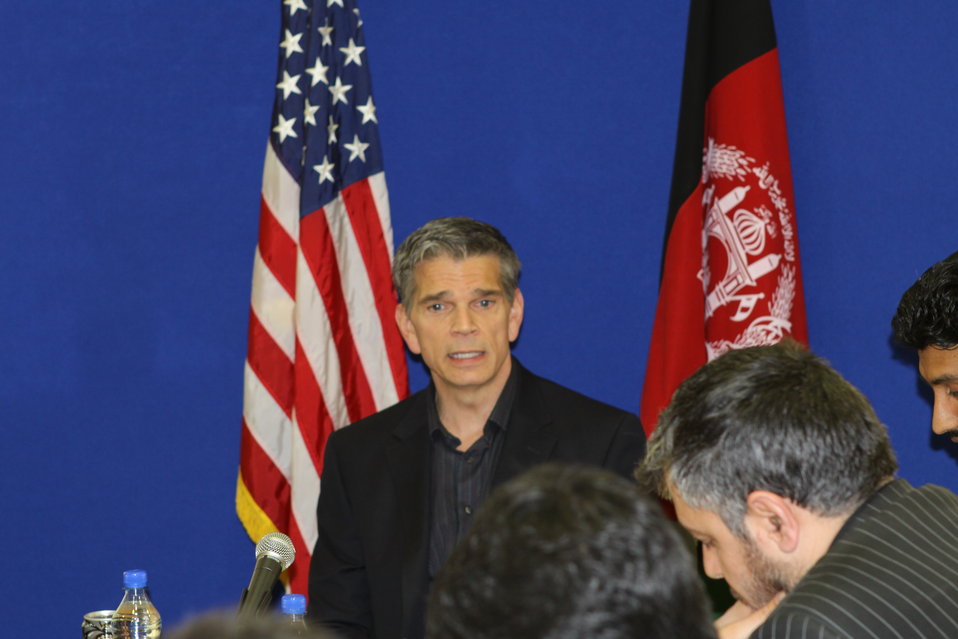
USAID Mission Director Earl Gast Conducts a Media Roundtable with Afghan Media, March 17, 2011